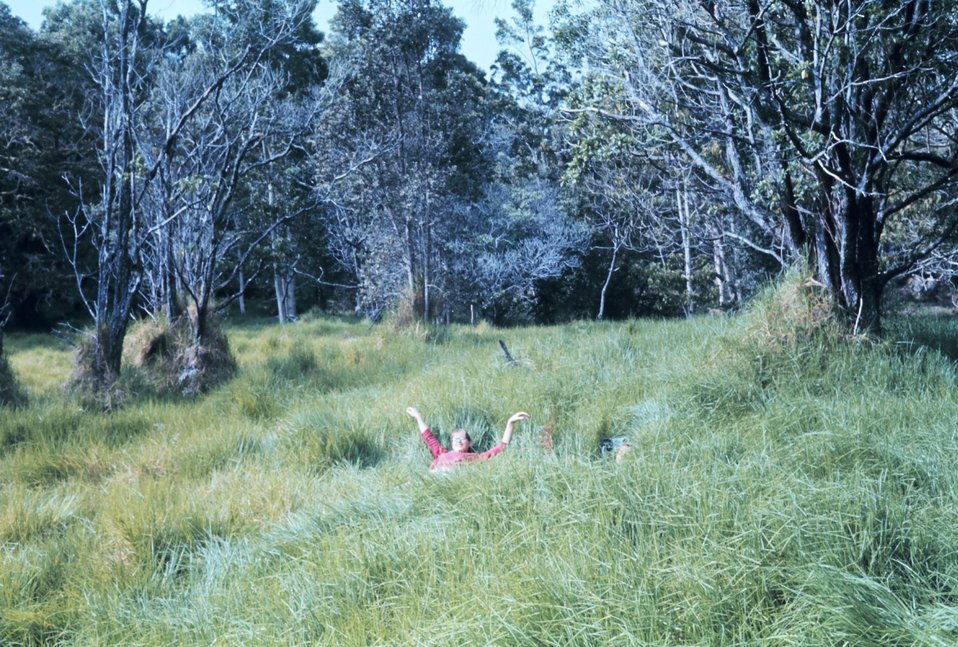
Luxuriating in tall Hawaiian grass